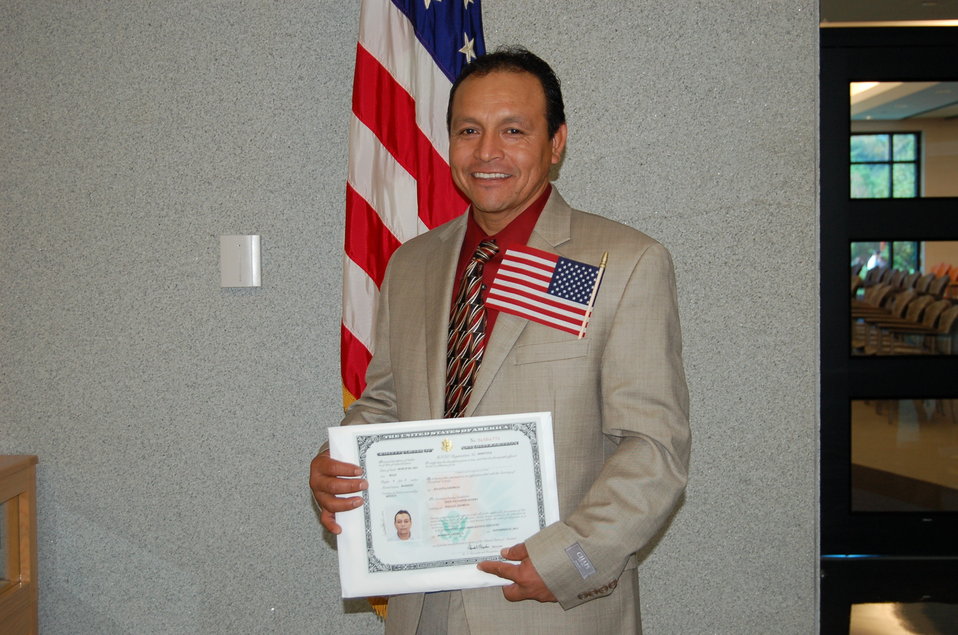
New Citizens